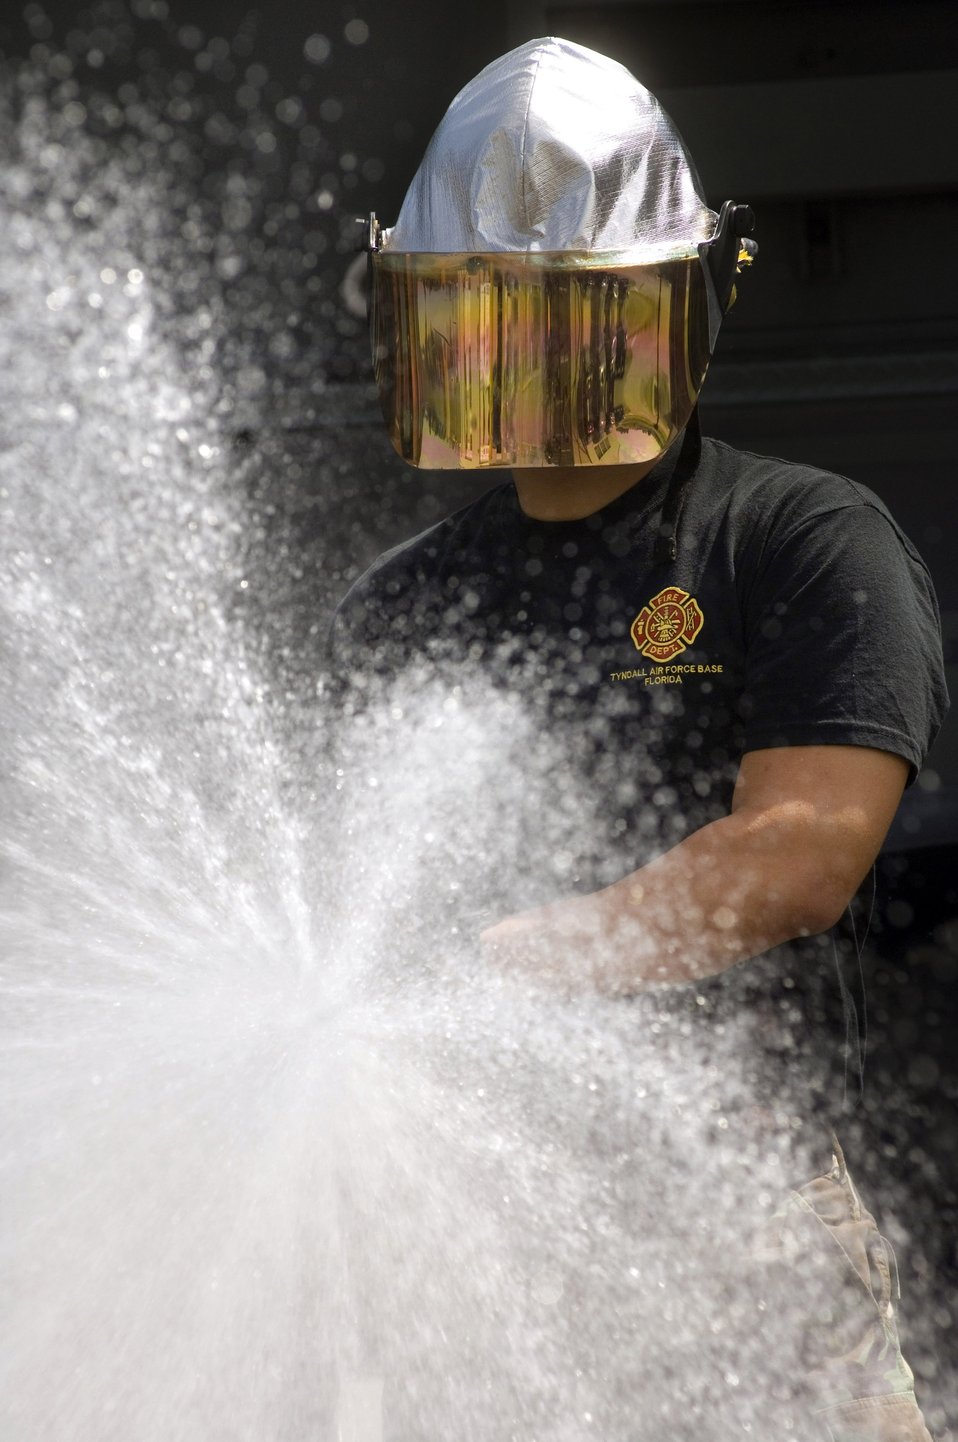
Airmen support Belgium tenant unit

Senior Airman Tony Brown Jr. tests a water pump truck at Chievres Air Base, Belgium. Airman Brown is with the 309th Airlift Squadron.